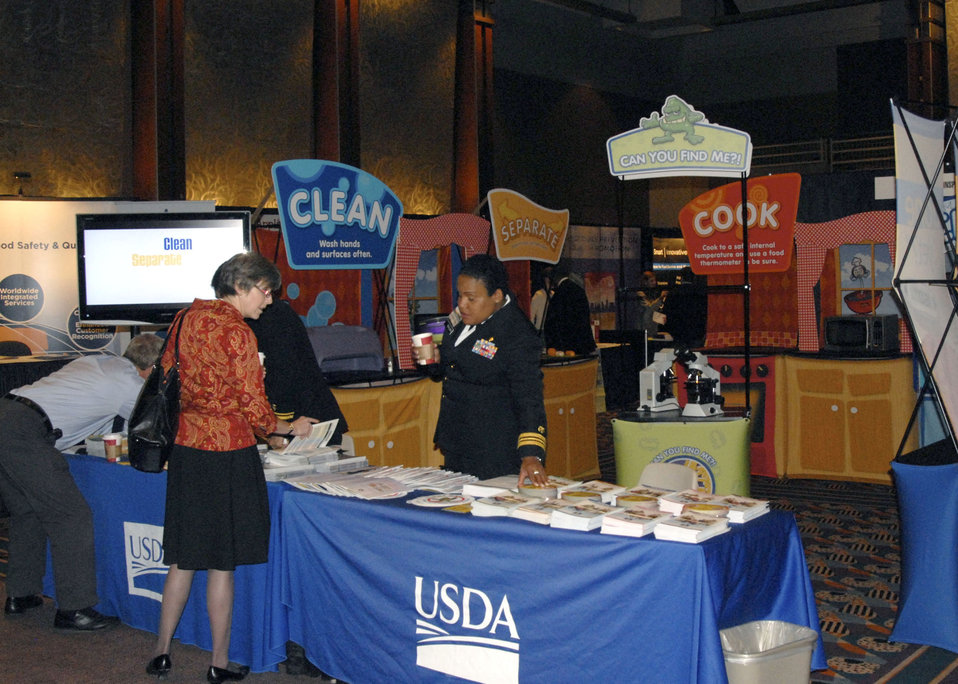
U. S. Department of Agriculture exhibits at the Food Safety Education Conference held in Atlanta, GA., on Mar. 24, 2010. Food borne illness is a preventable and under reported disease that presents a major challenge to both the general and at-risk populations. The Food Safety Inspection Service provides educational brochures and displays to help educate consumers. USDA photo 10di1284-05